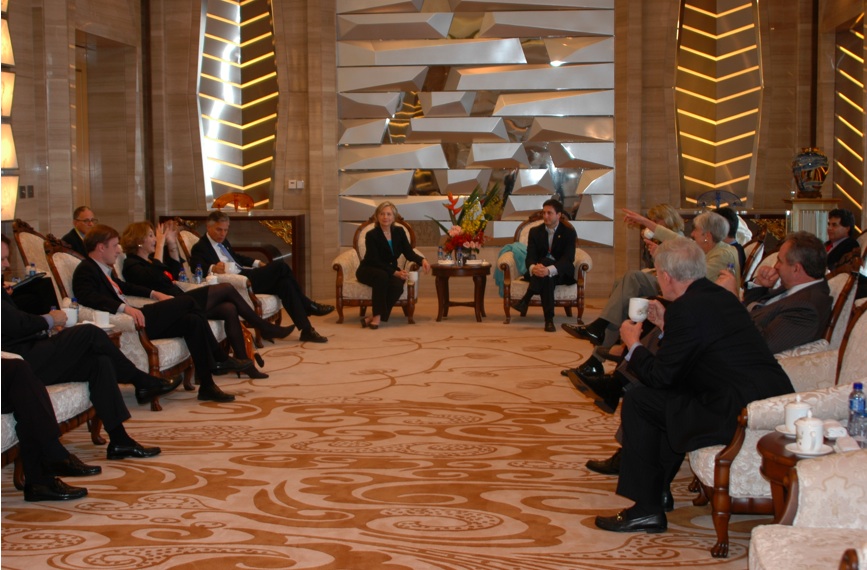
Secretary Clinton Meets With U.S. Officials

U.S. Secretary of State Hillary Rodham Clinton meets with senior U.S. officials across all agencies in Shanghai, China, May 22, 2010.